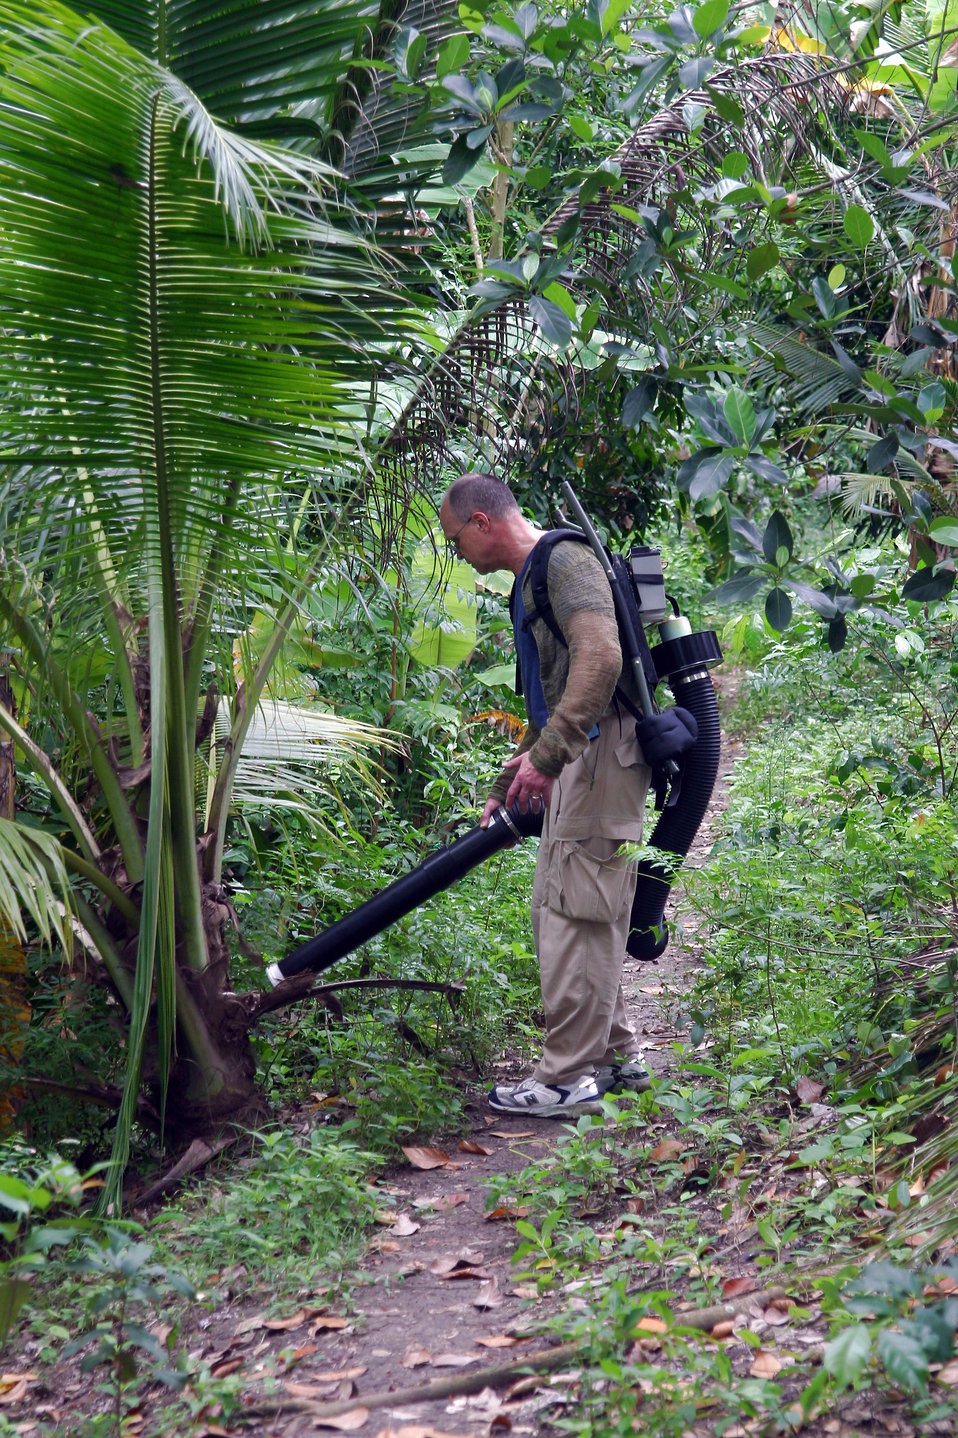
Breakthrough in preventing Dengue fever

Col. James Swaby uses a powered aspirator to collect mosquitoes in a northern Thailand jungle in August 2007. The mosquitoes are processed to remove their genetic material for testing to determine their species and if they are infected with Dengue Fever. Colonel Swaby is the 59th Clinical Research Division chief at Wilford Hall Medical Center, Lackland Air Force Base, Texas.